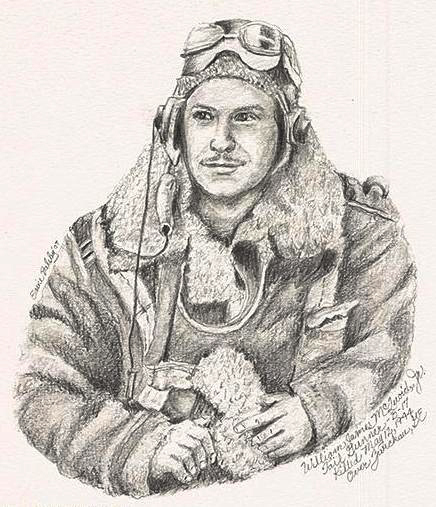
AF Art PB

This graphite sketch of William James McQuoid Jr., the artist's uncle, is one of two pieces of original artwork Elaine Balsley donated to the Air Force Art Program earlier this year. The sketch is on display at the museum now through 2011 as part of the biannual presentation exhibit of the Air Force Art Program.